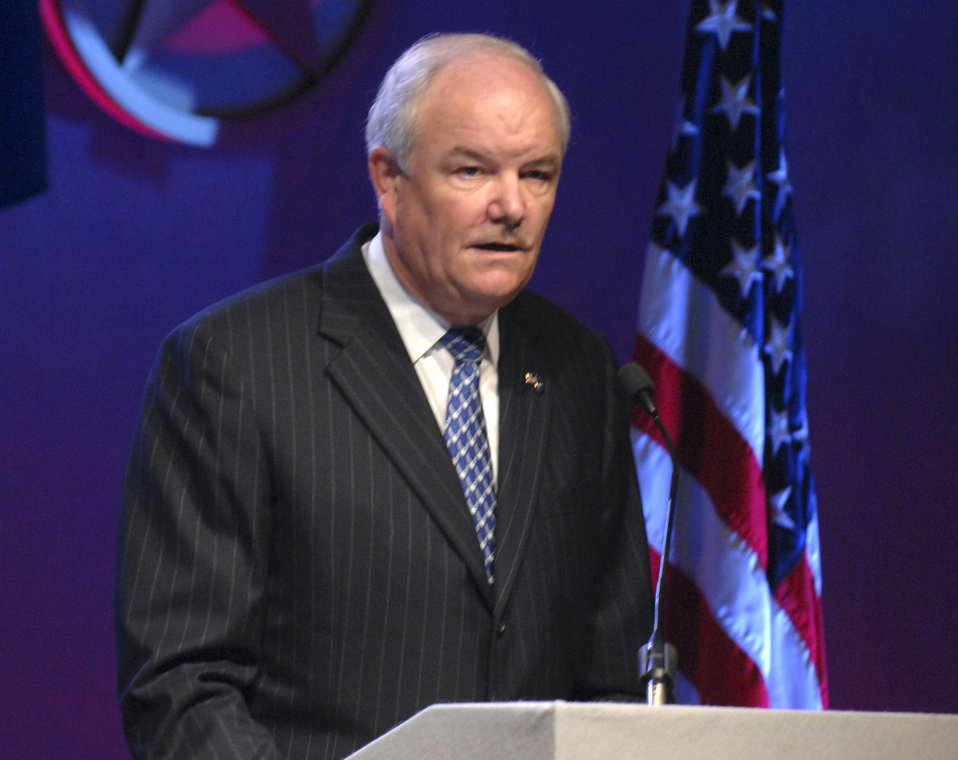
Secretary Wynne speaks at AFA conference

Secretary of the Air Force Michael W. Wynne addresses the audience Sept. 25 at the Air Force Association's Air & Space Conference and Technology Exposition in Washington, D.C.